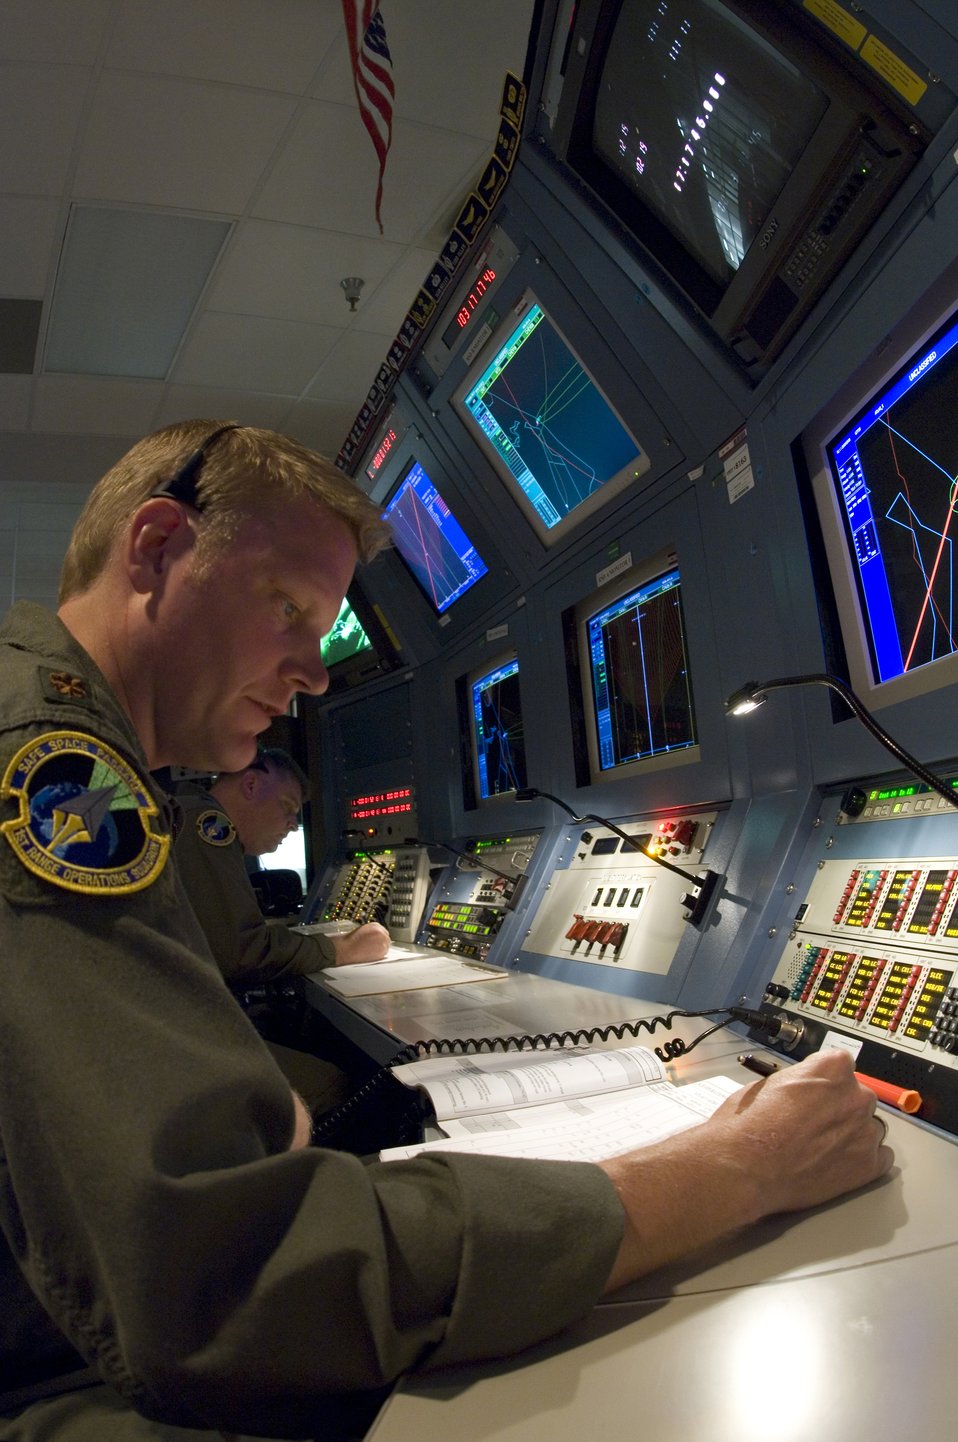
Florida ICE

Maj. Kevin Vander Molen follows launch procedures at Cape Canaveral Air Force Station, Fla., during an integrated crew exercise, or ICE, on Thursday, April 13, 2006. The ICE tests personnel practices, anomaly resolution procedures and team communications. This is the final step in preparation for an April 20 launch that will carry a commercial satellite into orbit using an Atlas launch vehicle. Major Vander Molen is a senior mission flight controller with the 45th Space Wing at Patrick Air Force Base, Fla.